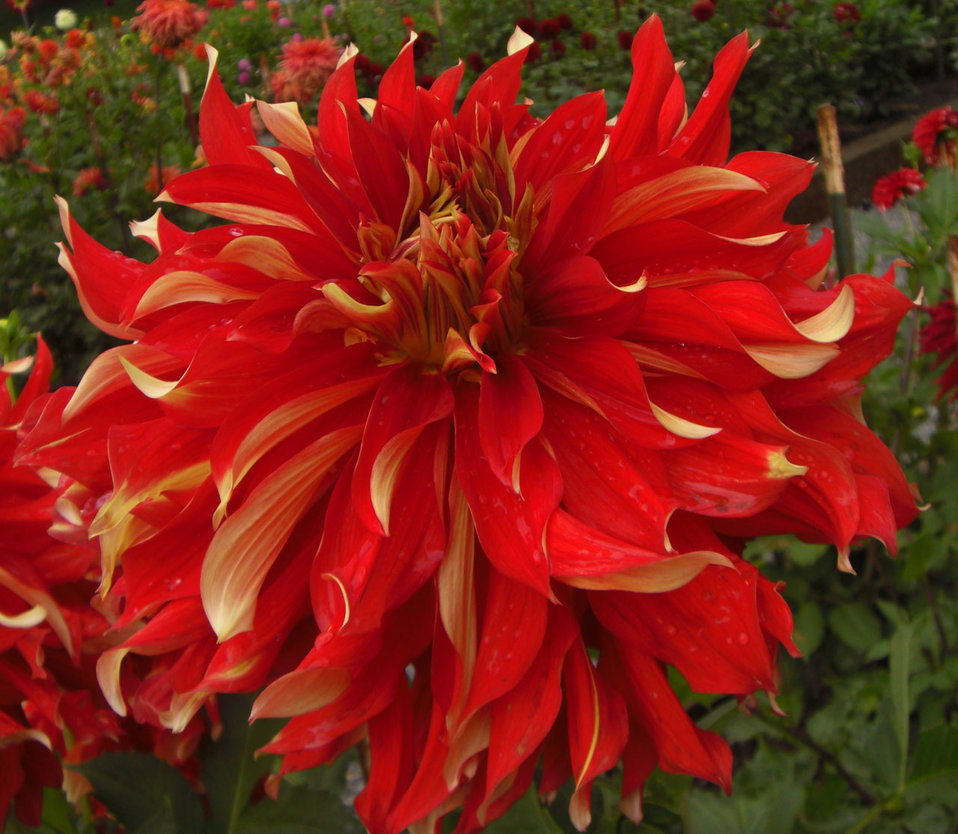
Lions head flower in point defiance, tacoma. i made up the name. if you know the correct species please email me..